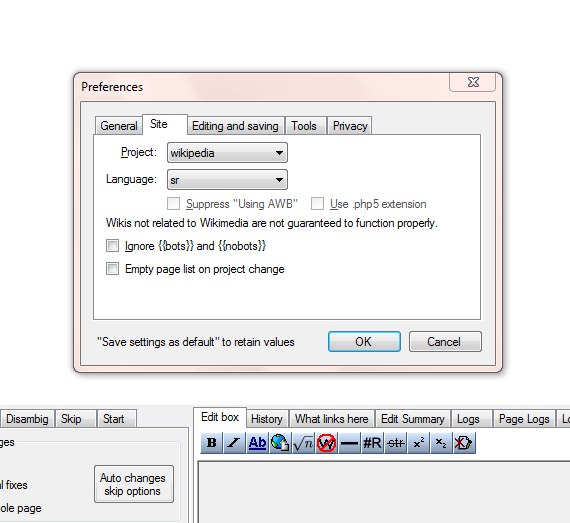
Српски / srpski: Слика екрана, туторијел за коришћење алата за уређивање википедије на српском језику. Сличне слике постоје и на другим –≤–∏–∫–∏–ø–µ–

Српски / srpski: Слика екрана, туторијел за коришћење алата за уређивање википедије на српском језику. Сличне слике постоје и на другим википедијама са лиценцом -{free screenshot}-.